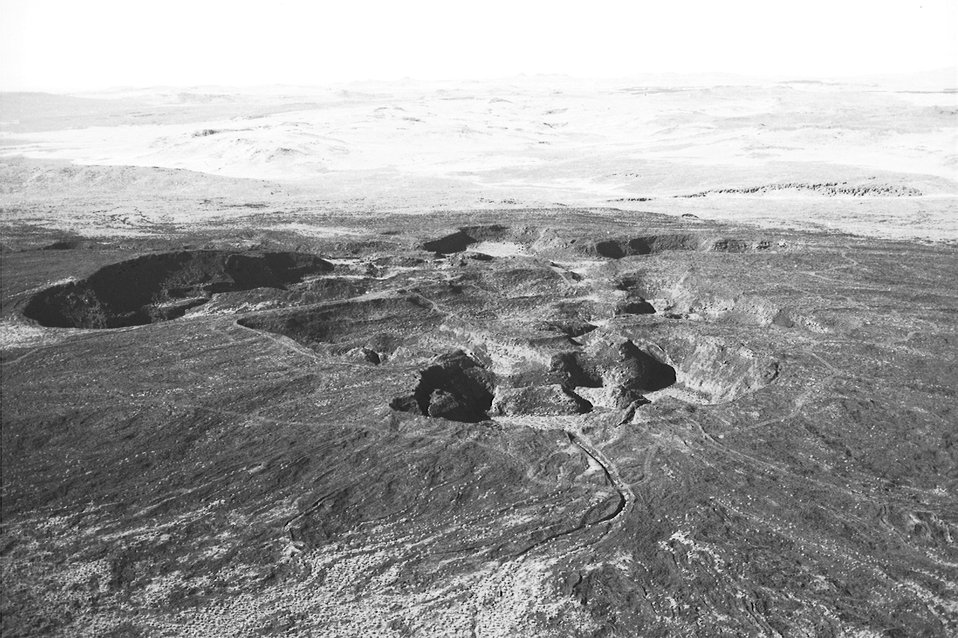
Black Butte from air